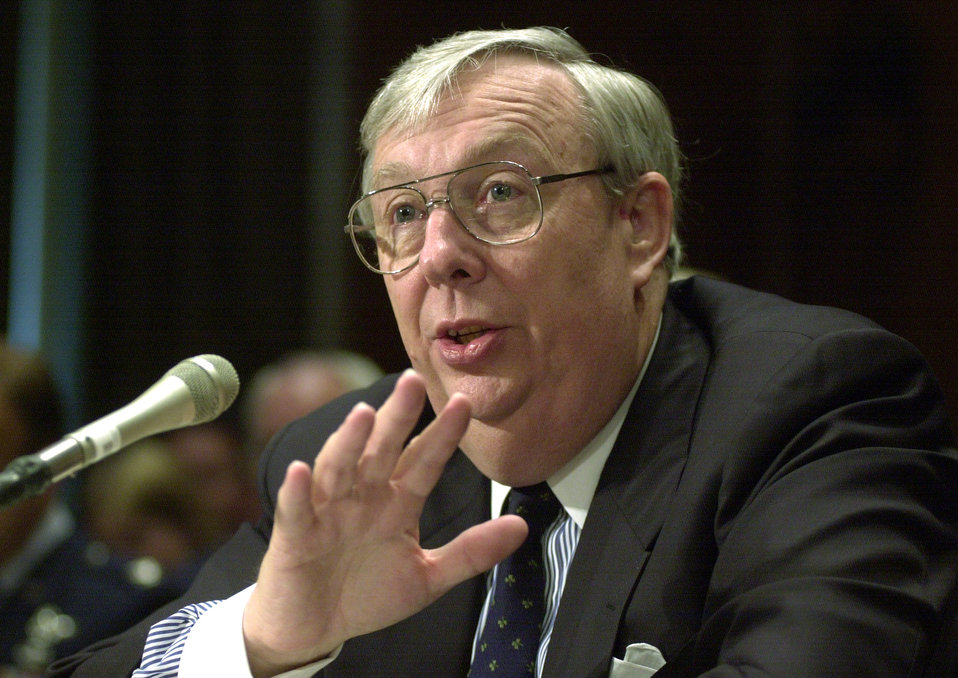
Secretary Roche submits letter of resignation

WASHINGTON -- Air Force Secretary Dr. James G. Roche submitted his resignation Nov. 16. Secretary Roche said he plans on leaving his position Jan. 20 or sooner if his successor is confirmed by the Senate by then. He has led the Air Force since 2001.